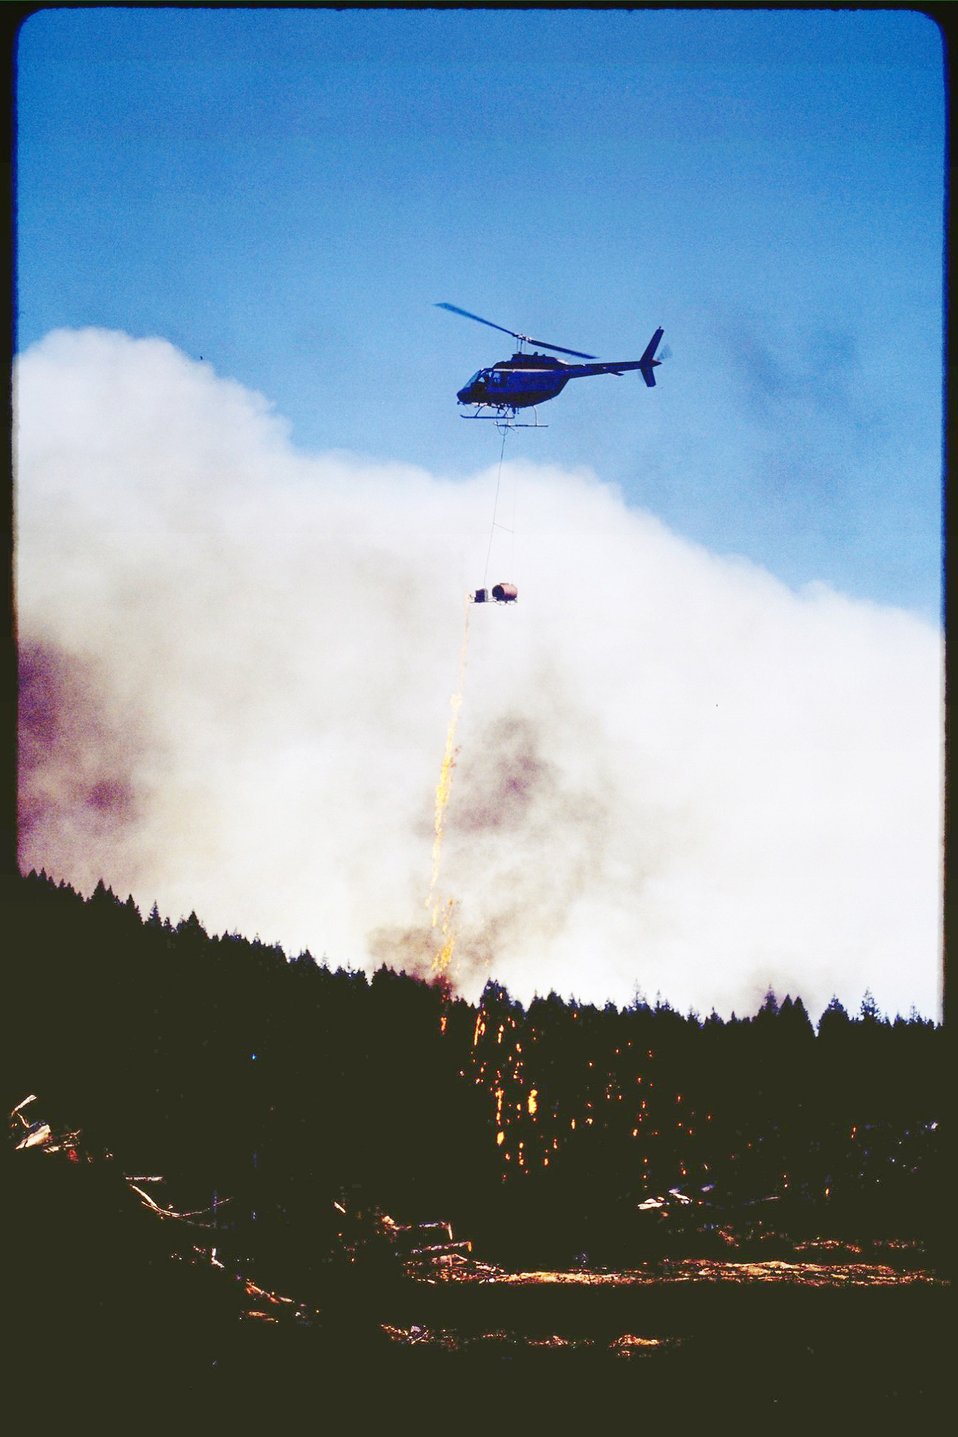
Helicopter dumping fire retardant on a prescribed burn.